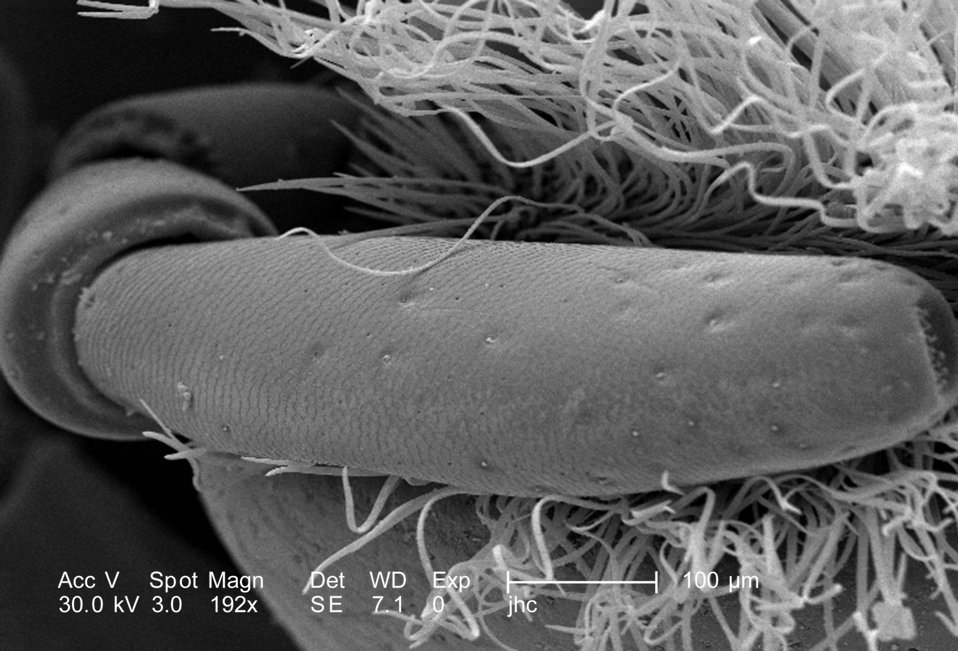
Magnified 192X, this scanning electron micrograph (SEM) revealed morphologic details found at the distal tip of this adult 'figeater' beetle's, Cotinis mutabilis, maxillary 'palpus', which emanates bilaterally from the maxillae lateral to each bilateral 'galea'. It is comprised of one to six segments, and each is attached to each maxilla by a exoskeletal structure known as the 'palpifer'.